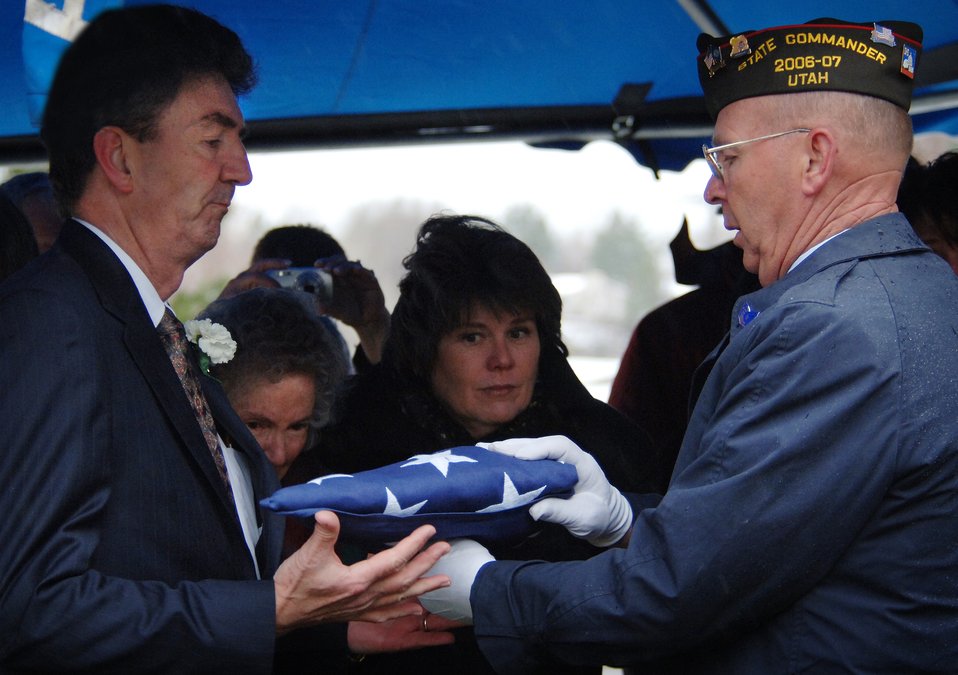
Lt. Col. Chase Nielsen service held March 28

Terry J. Nielsen accepts the traditional folded flag from Utah's Veterans of Foreign War state commander during the interment service for his father Lt. Col. Chase J. Nielsen March 28. Colonel Nielsen was one of the few remaining members of the famed Doolittle Raiders. The members of the Doolittle Raiders reached national acclaim in 1942 after launching the first successful aerial bombing raid on Tokyo, Japan as retaliation for the Japanese bombing of Pearl Harbor, Hawaii in December of 1941.